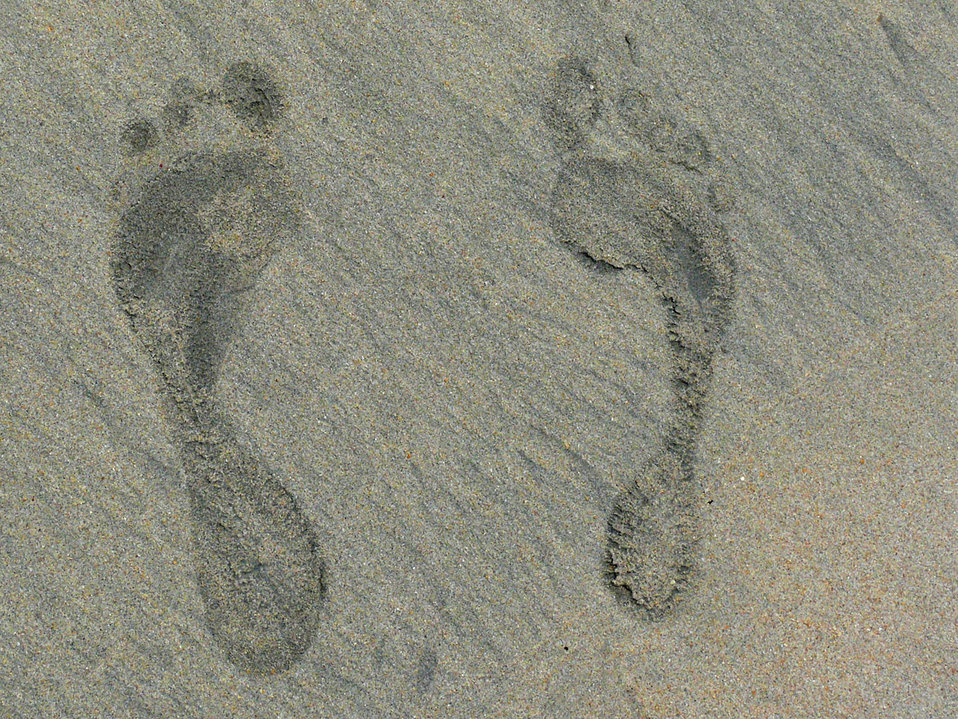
Foot prints in sand.